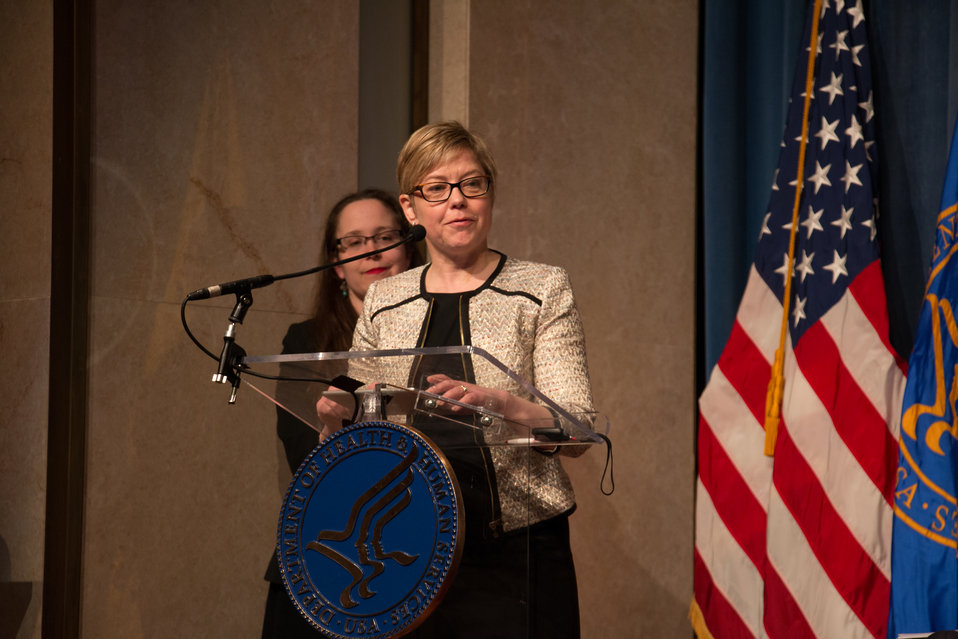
VHAP Launch (238 of 511)